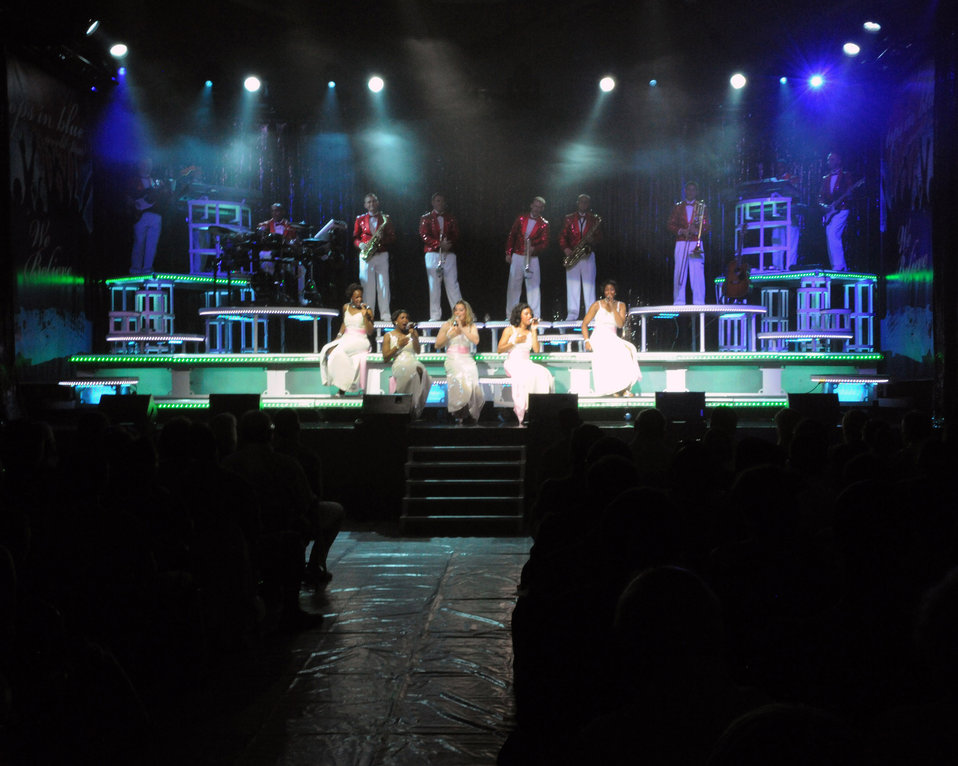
'Tops in Blue' perform overseas

Touring overseas, the Air Force's premier entertainment showcase performs at Royal Air Force Croughton, England, June 22, 2010. Every year Airmen from around the world compete to be a member of Tops In Blue. This year 36 Airmen are on the team.